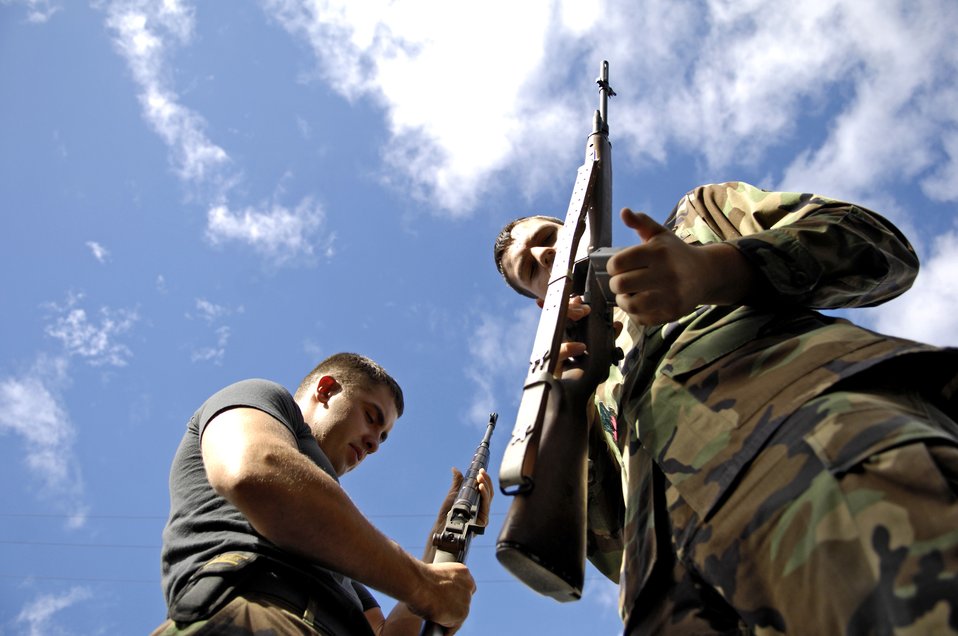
Honoring customs

Senior Airman Adam Wade and Airman 1st Class Cory Walls check their weapons before loading them with blanks to practice gun salute firing positions at Hickam Air Force Base, Hawaii Oct. 25. The 15th Airlift Wing Honor Guard emphasizes the importance of military customs and courtesies, dress and appearance, and drill and ceremony.